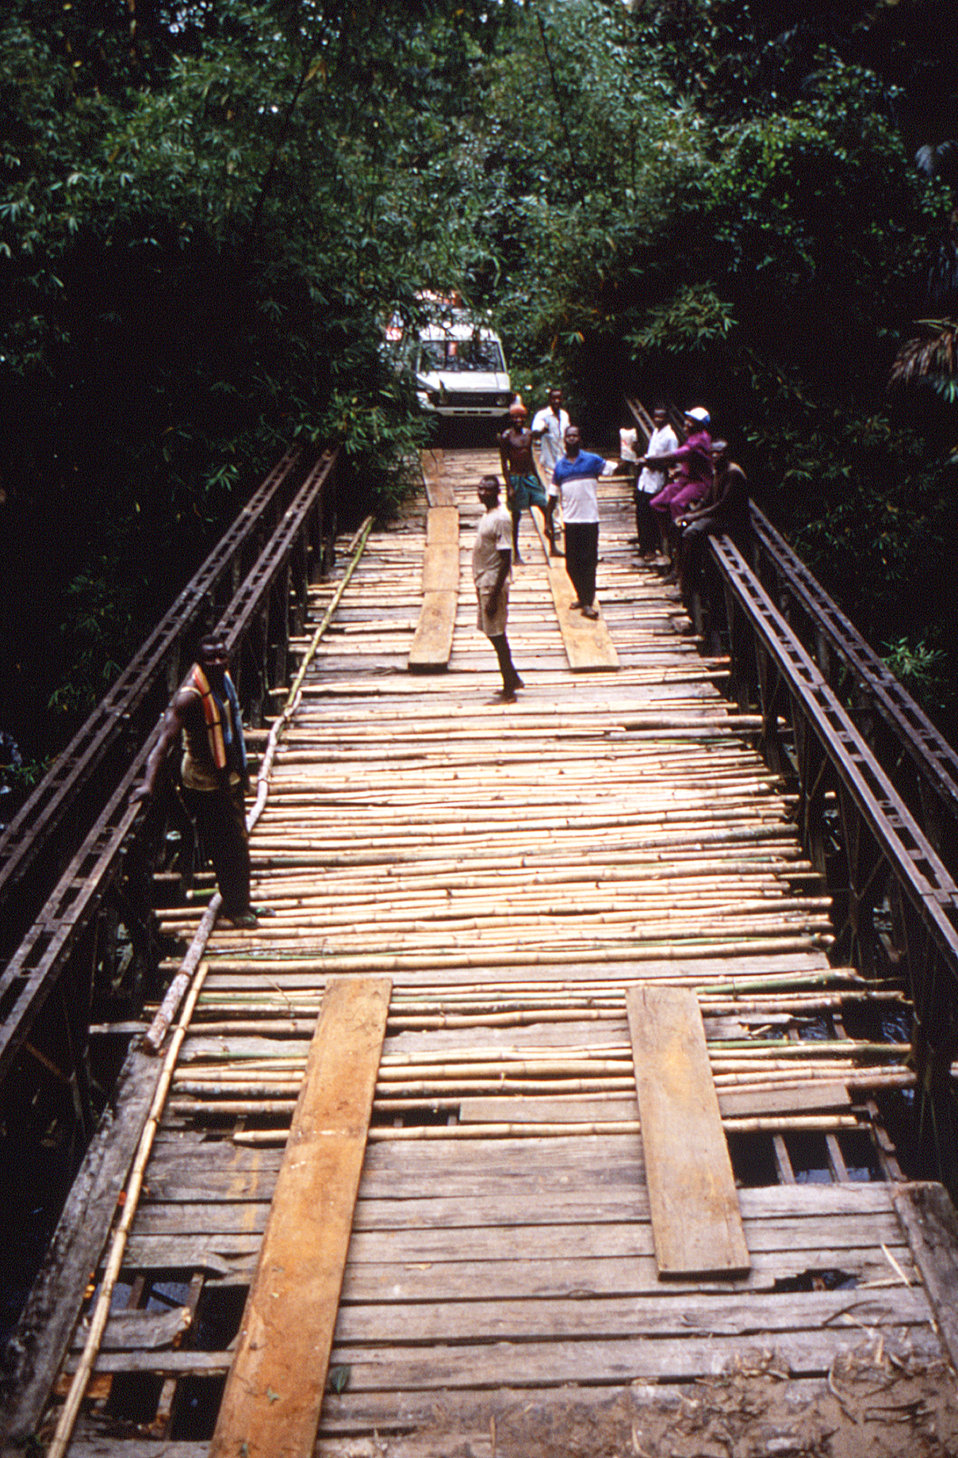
This image was created during an investigation into an outbreak of monkeypox, which took place in the Democratic Republic of the Congo (DRC), 1996 to 1997, formerly Zaire. Depicted here, was the view of a bridge on the road from Katako-Kombe to the town of Ekanga.